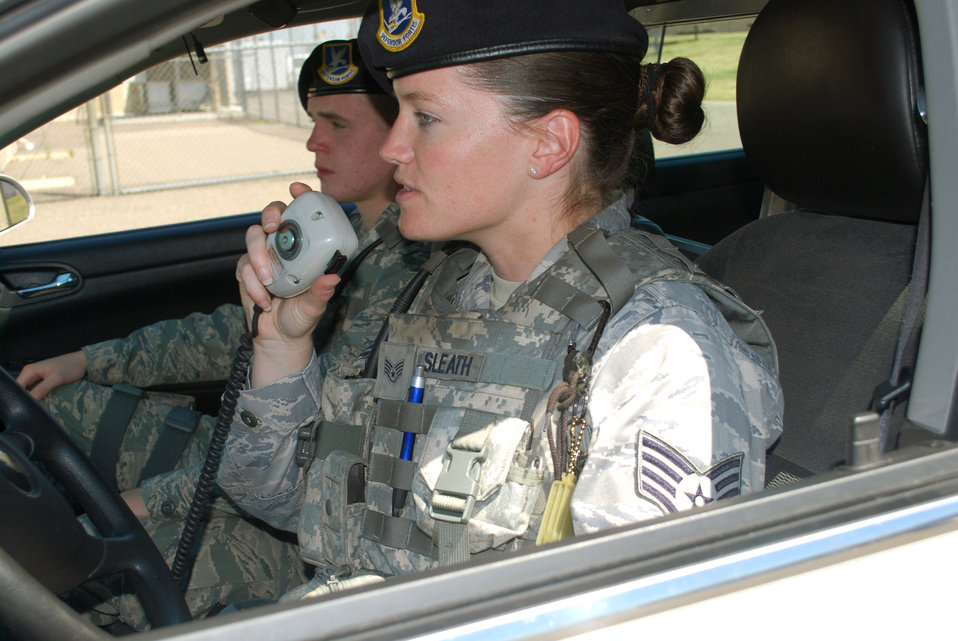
First responders

Staff Sgt. Elizabeth Sleath takes a radio call while on patrol July 28, 2010, at Malmstrom Air Force Base, Mont. Sergeant Sleath is a 341st Security Forces Squadron patrolman.